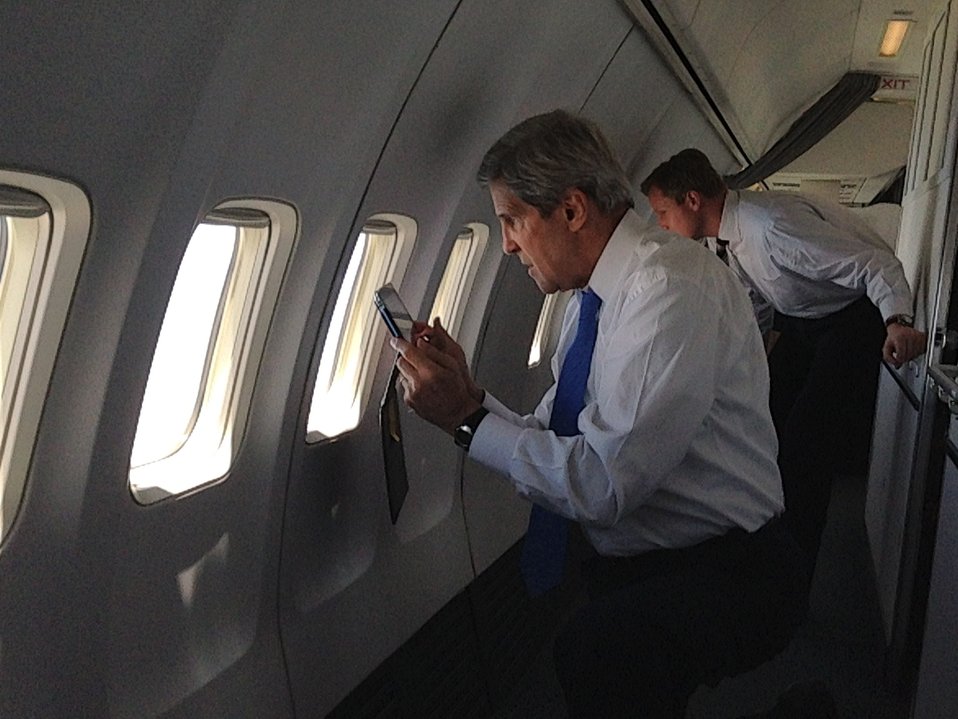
Secretary Kerry Takes a Photo

U.S. Secretary of State John Kerry uses his iPad to take a photo of Dubai, UAE, as his Air Force jet flew over on May 21, 2013, en route to Oman.